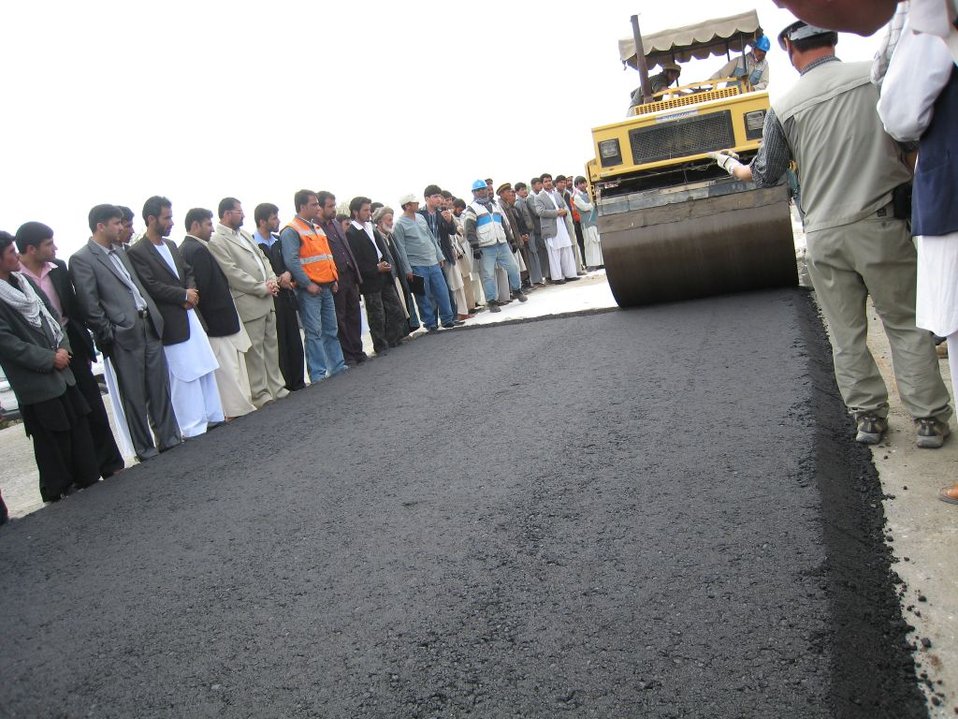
Kishim Fayzabad Road Paving